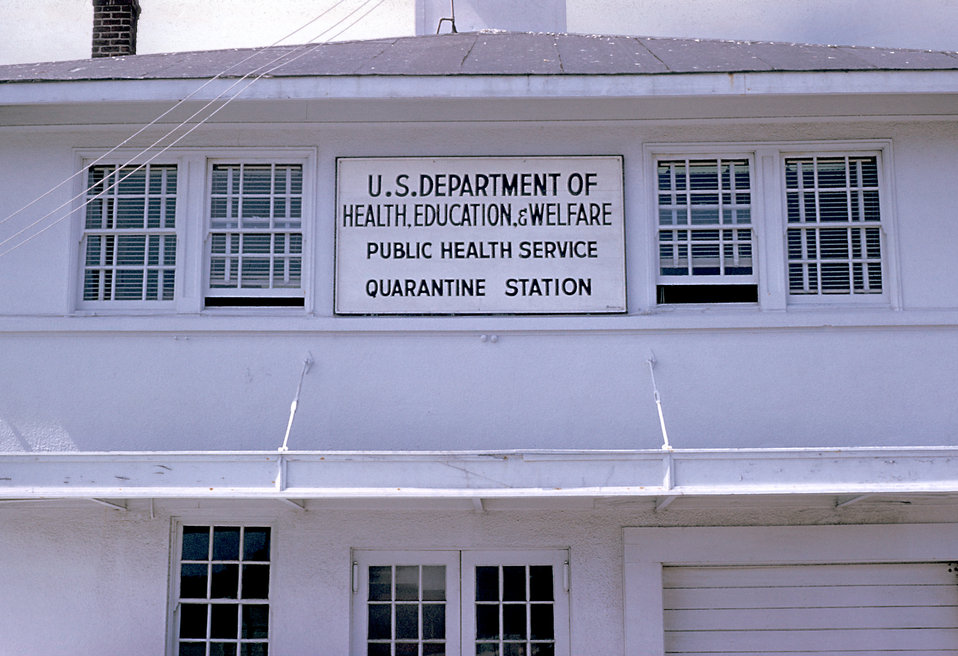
A Public Health Quarantine Station in San Francisco, 1961.